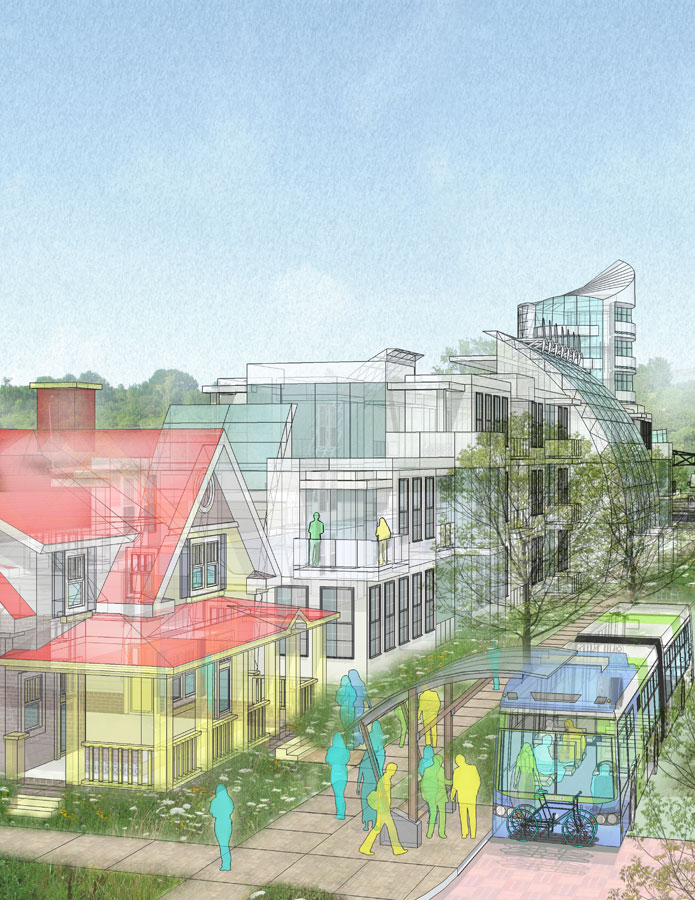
Chicago land-use-and-housing-rendering

'GO TO 2040,' metropolitan Chicago’s first comprehensive plan since 1909, is divided into 12 primary recommendations. The first, shown in this rendering, is achieving greater livability through land use and housing. GO TO 2040 is the winner of EPA’s 2013 National Award for Smart Growth Achievement in the category of Policies, Programs, and Plans. The award is given annually for creative, sustainable initiatives that better protect the health and the environment of our communities while strengthening local economies. In 2013, EPA recognized innovative projects in seven communities.